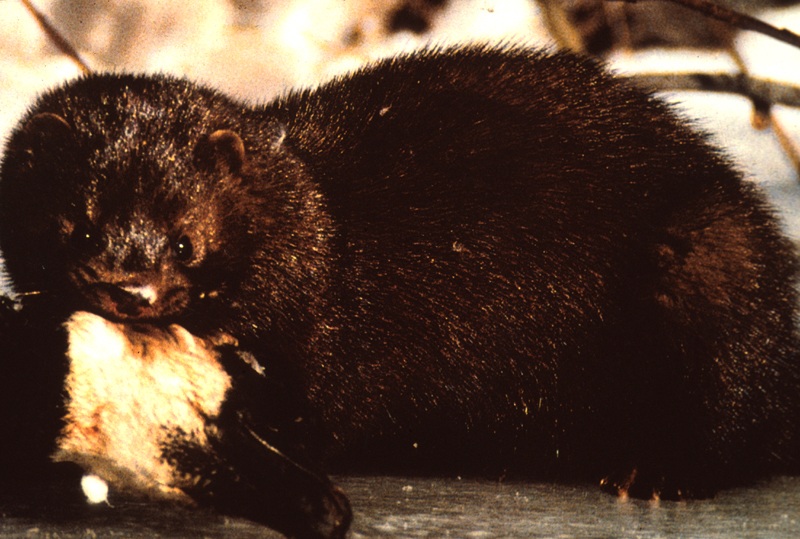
Mink Lower Salmon River Cottonwood Field Office UCSC Upper Columbia-Salmon Clearwater District